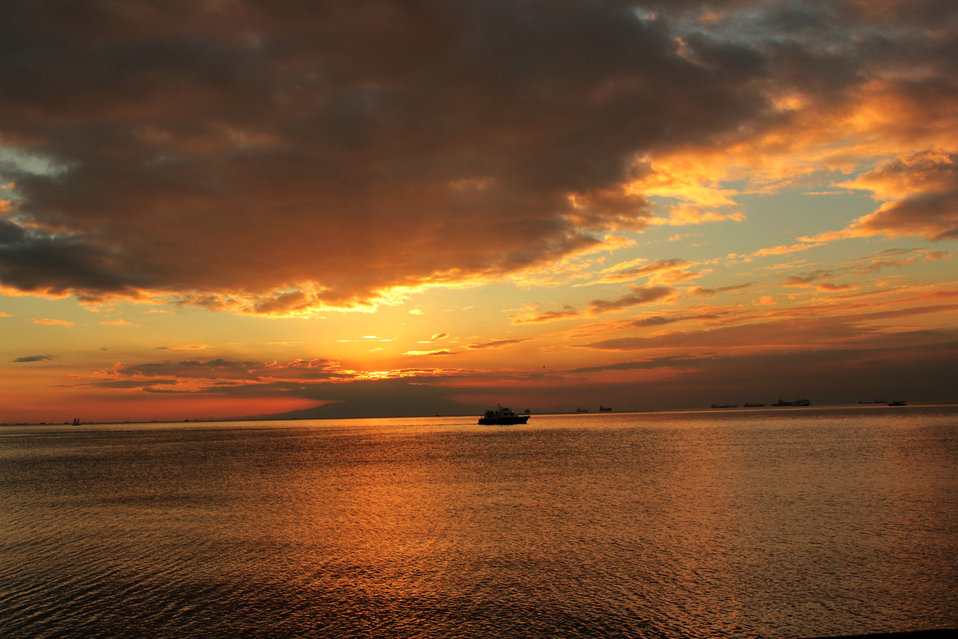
Sunset in manila bay 3

Sunset in manila bay.